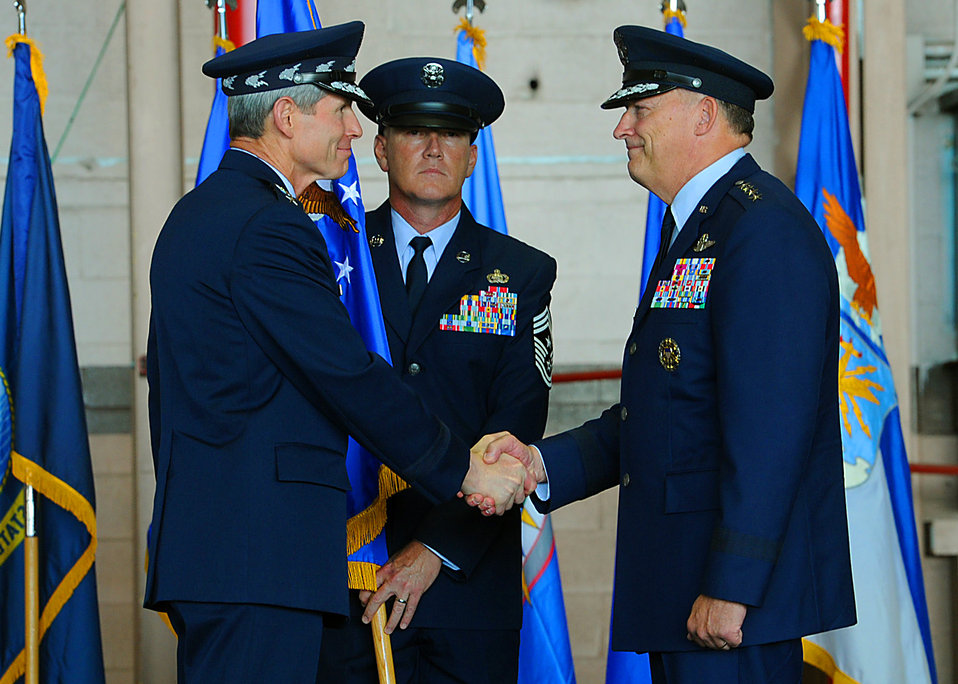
Farewell

Air Force Chief of Staff Gen. Norton Schwartz congratulates Gen. Gary North, former Pacific Air Forces commander, during the PACAF change of command ceremony at Joint Base Pearl Harbor-Hickam, Hawaii, Aug. 3, 2012. Gen. Herbert Carlisle is the successor to North, who is set to retire Oct. 1.